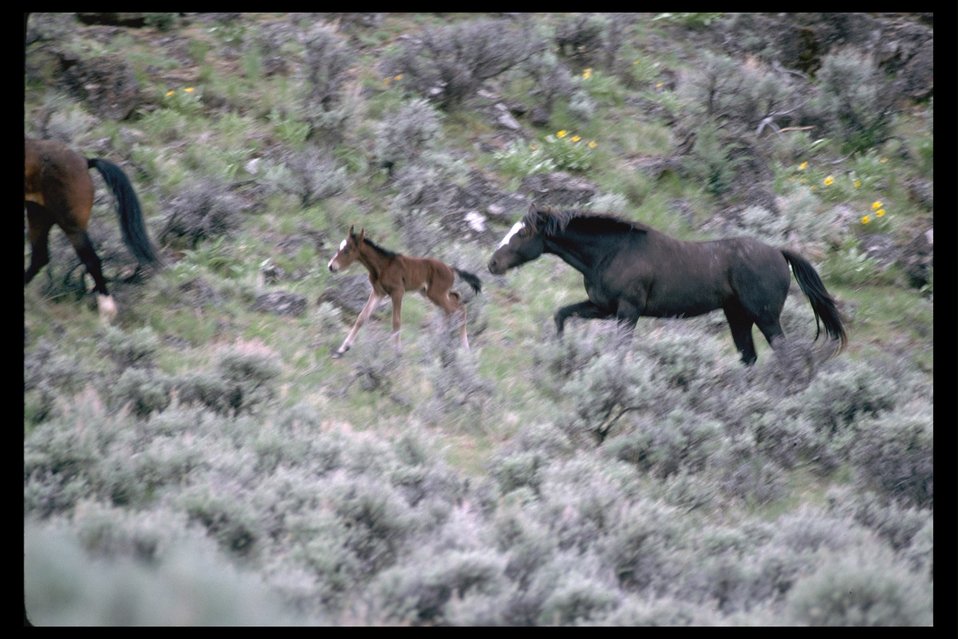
Wild horses in the South Steens HMA.